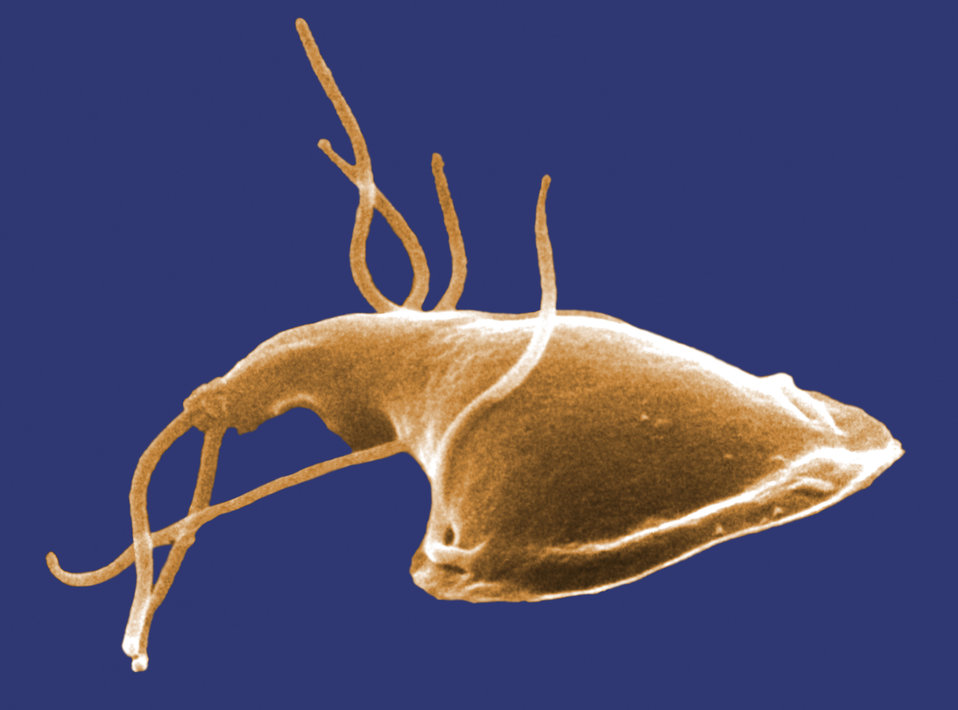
This digitally-colorized scanning electron micrograph (SEM) depicted the dorsal (upper) surface of a Giardia protozoan that had been isolated from a rat's intestine. Some of the identifying morphologic characteristics include pairs of thread-like flagella that facilitate motility, and a ventolateral flange that appears as a 'ruffle' around the anterior portion of the organism. Pairs of flagella seen here include an anterior, posterior-lateral, and caudal pairs.